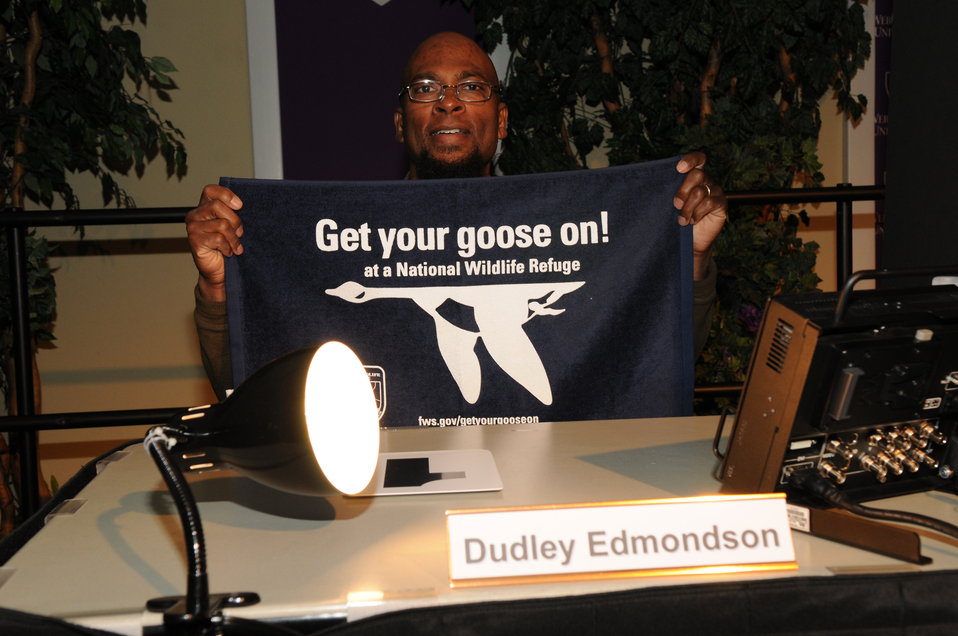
Get your goose on!

The U.S. Fish & Wildlife Service sponsored the 2012 Federal Duck Stamp Art Contest September 28 and 29 in Ogden, Utah, at Weber State University. A panel of five judges was responsible for choosing the art work used to design the 2013-2014 Migratory Bird Hunting and Conservation Stamp.